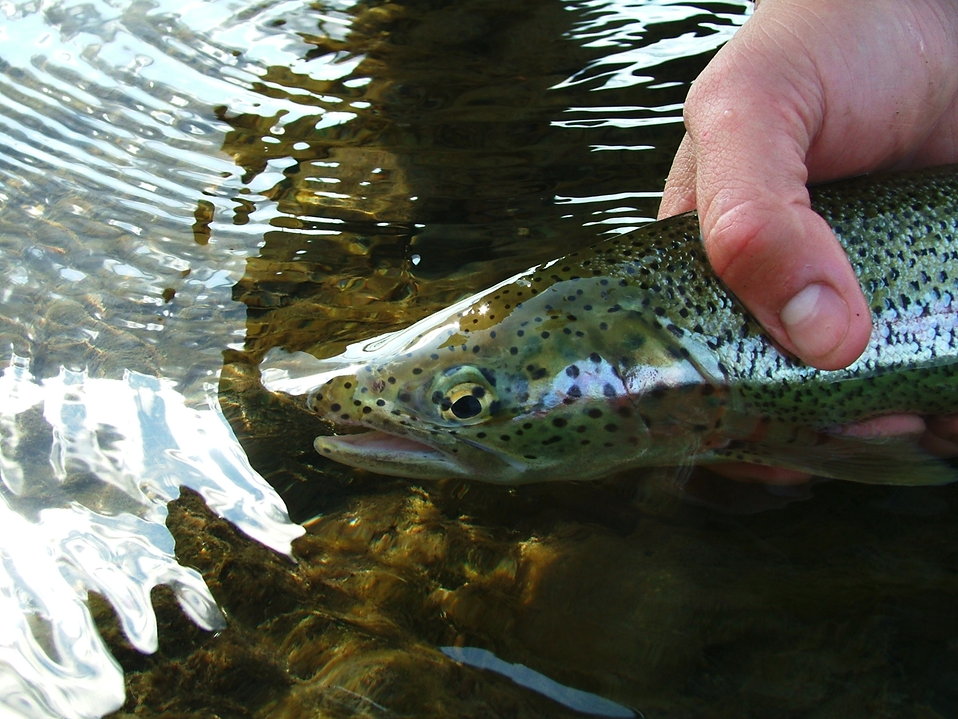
Rainbow Trout being released